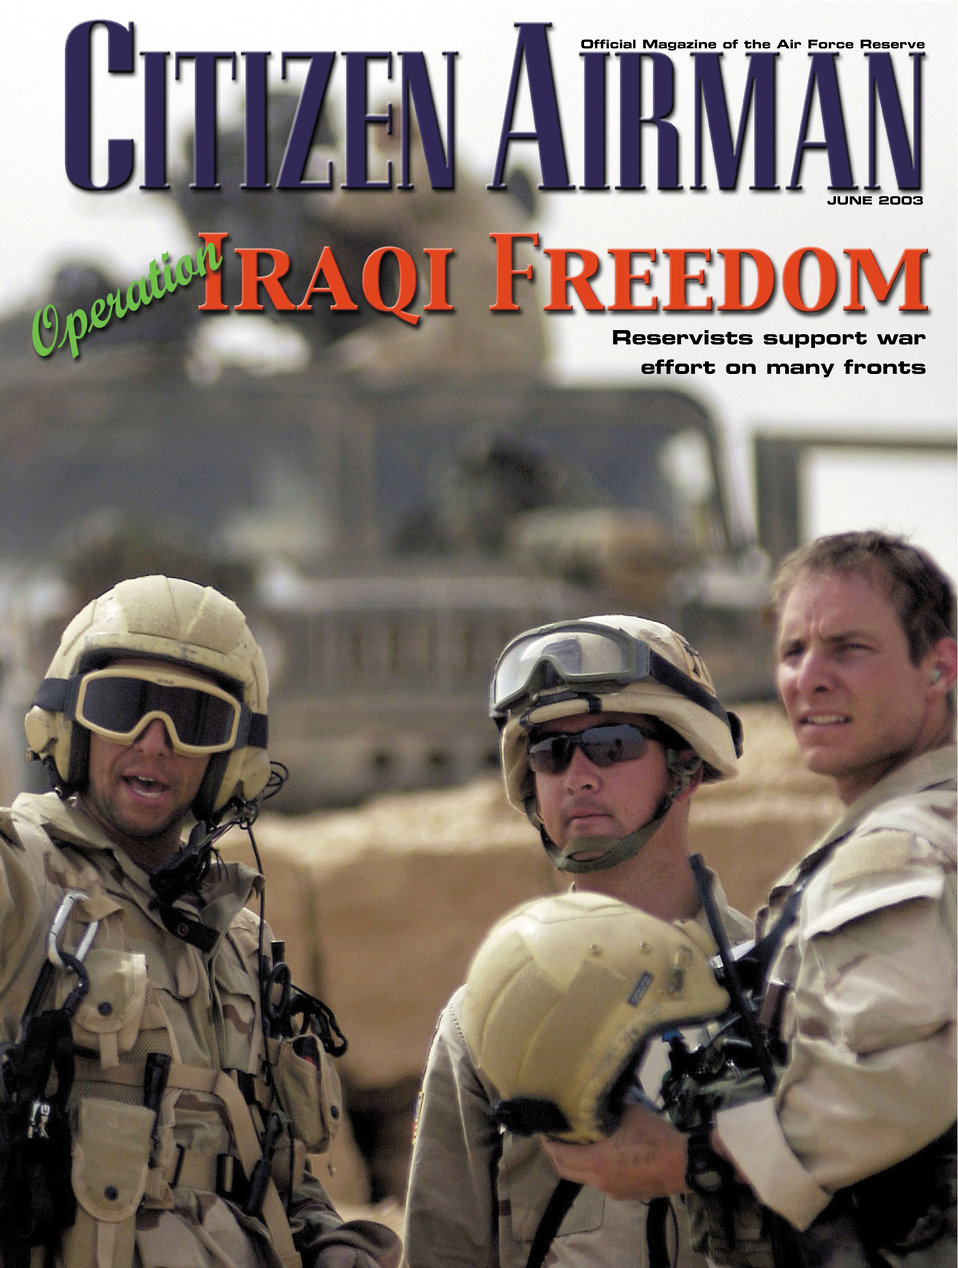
Citizen Airman

ROBINS AIR FORCE BASE, Ga. -- The June issue of Citizen Airman magazine now available.